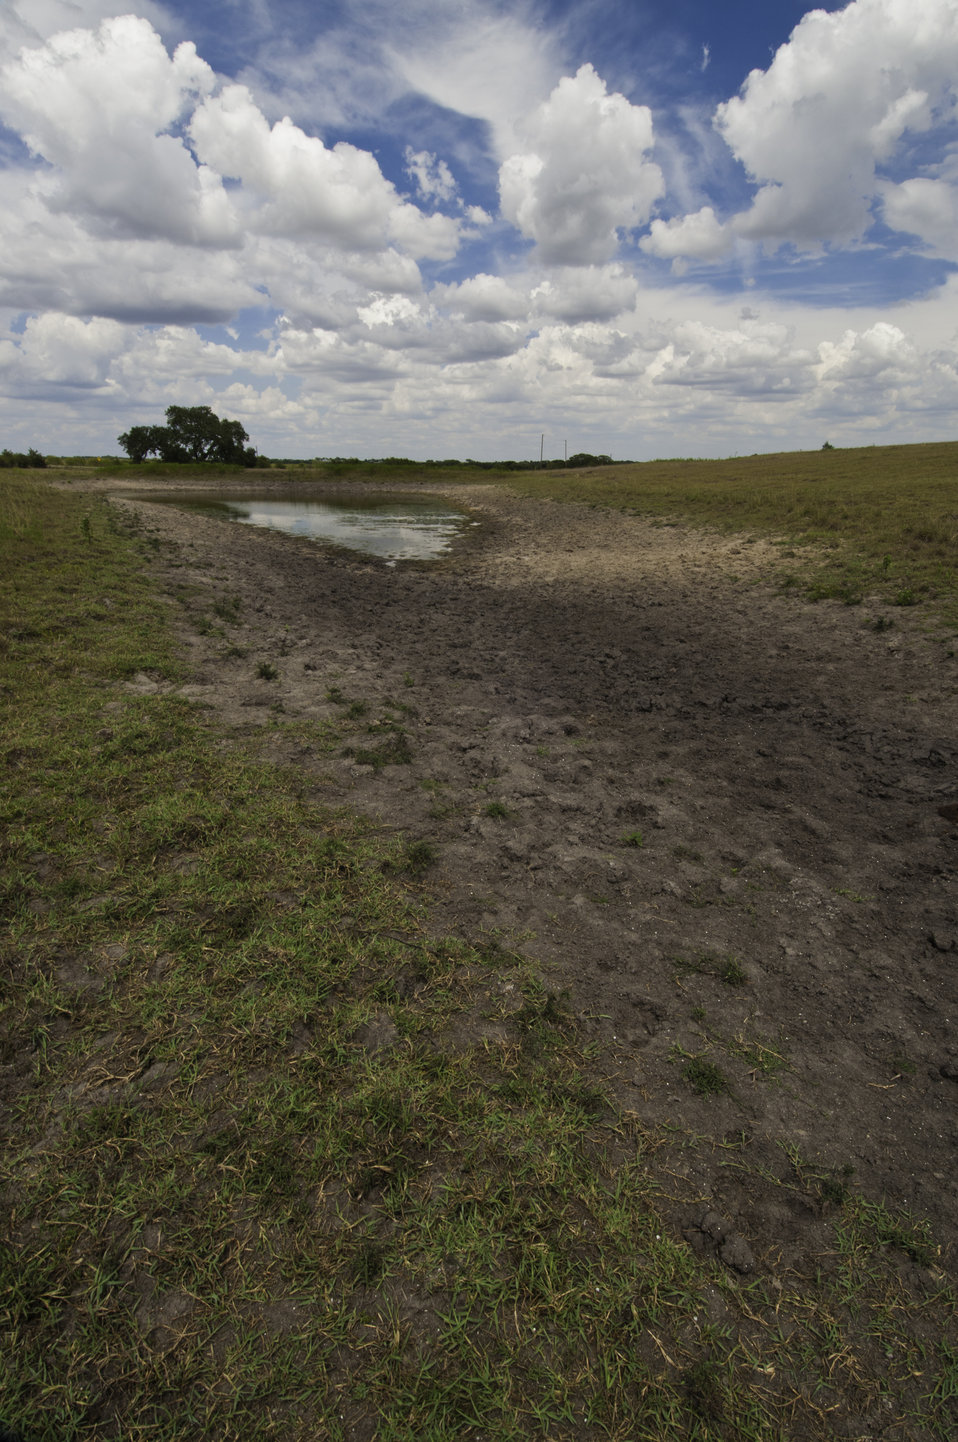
Dry livestock tanks show the effect of drought in Schulenberg, TX on Aug. 23, 2013.